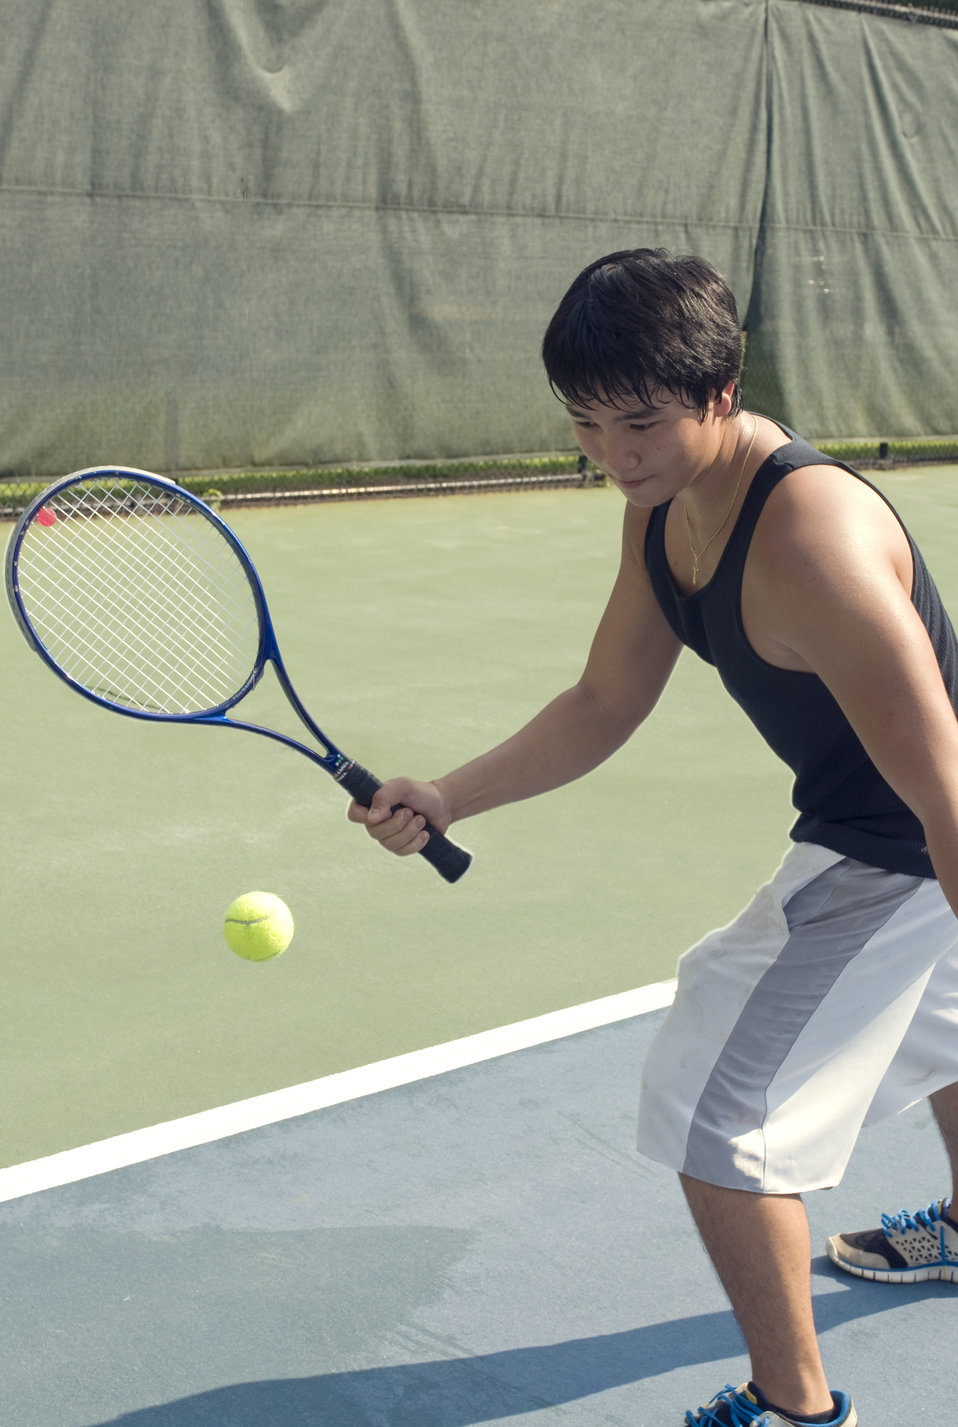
Right hand holding a tennis racket, this young man was playing a game of tennis on the court. Wearing a darkly-colored tank top, loose-fitting shorts, and a protective layer of sunscreen, all helped block ultraviolet rays from damaging his sun-exposed skin. He'd also packed, or had access to some drinking water, which would keep him hydrated in the heat.